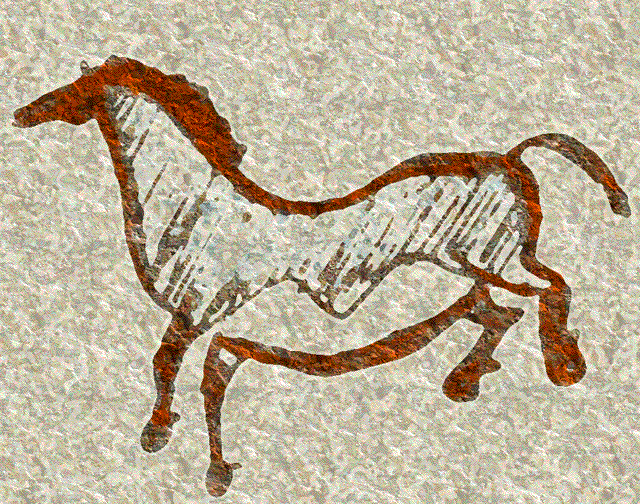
Español: Ejemplo genérico de caballo pintado paleolítico según las características típicas del estilo III de Leroi-Gourhan: obsérvese la microcefalia y el vientre abombado típicos de este periodo